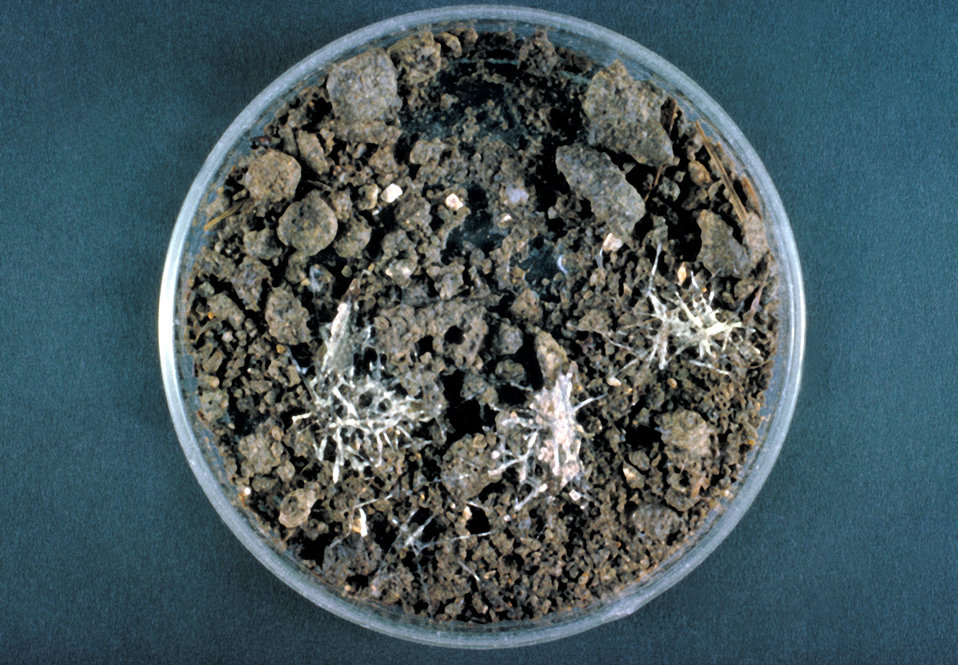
This is a photograph of a hair plate culture of the fungus Histoplasma capsulatum.